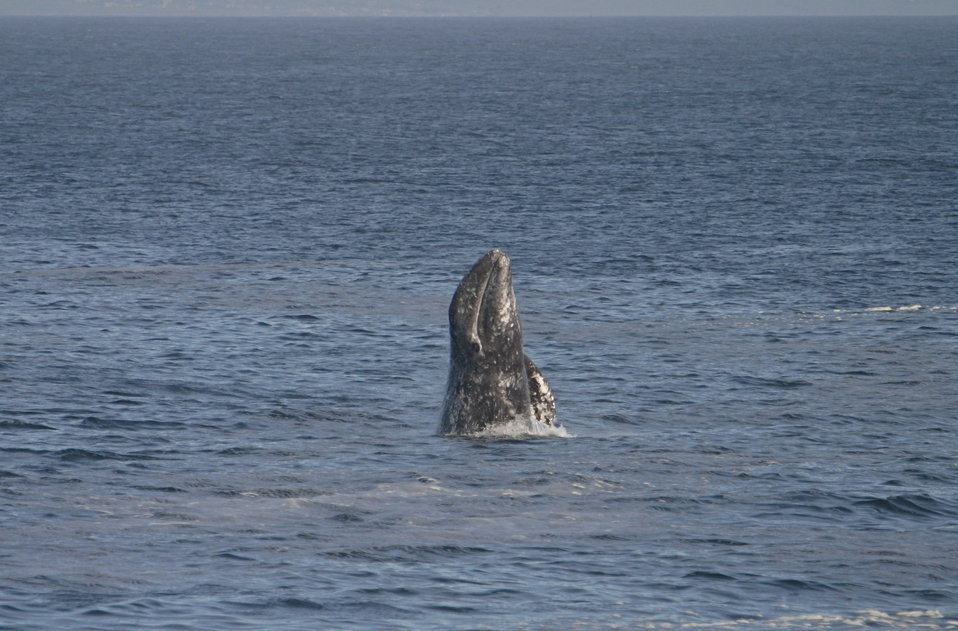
A breaching gray whale off Point Piedras Blancas.